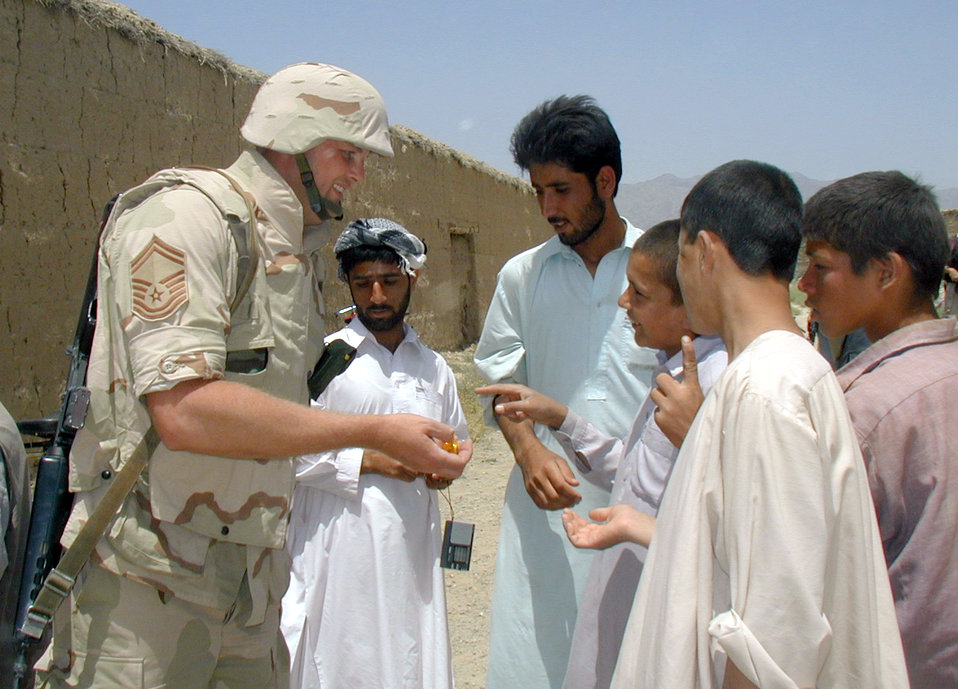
Candy man

OPERATION ENDURING FREEDOM -- Senior Master Sgt. Gary Ryckman hands out candy to Afghans from the village of Qual'eh-ye Musa. Ryckman is the chief air traffic controller at Bagram Air Base, Afghanistan. The Pennsylvania Air National guardsman was among 15 airmen from the 455th Expeditionary Operations Group who visited the village June 15 as part of the